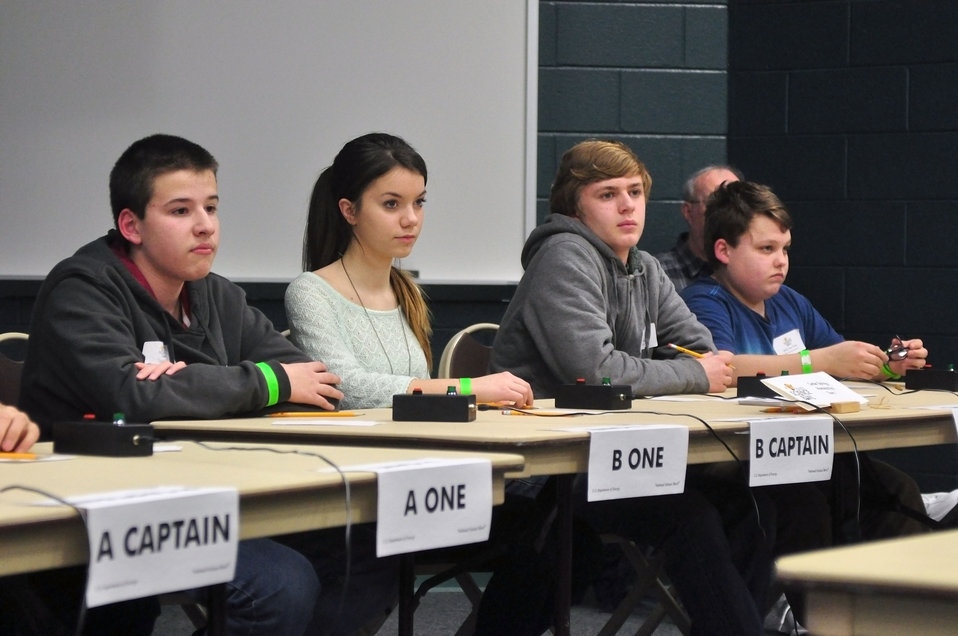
Cedar Springs Home School Association Second Place DOE Middle School Science Bowl

14-017 DOE photo Lynn Freeny 2-1-2014 Oak Ridge Tennessee